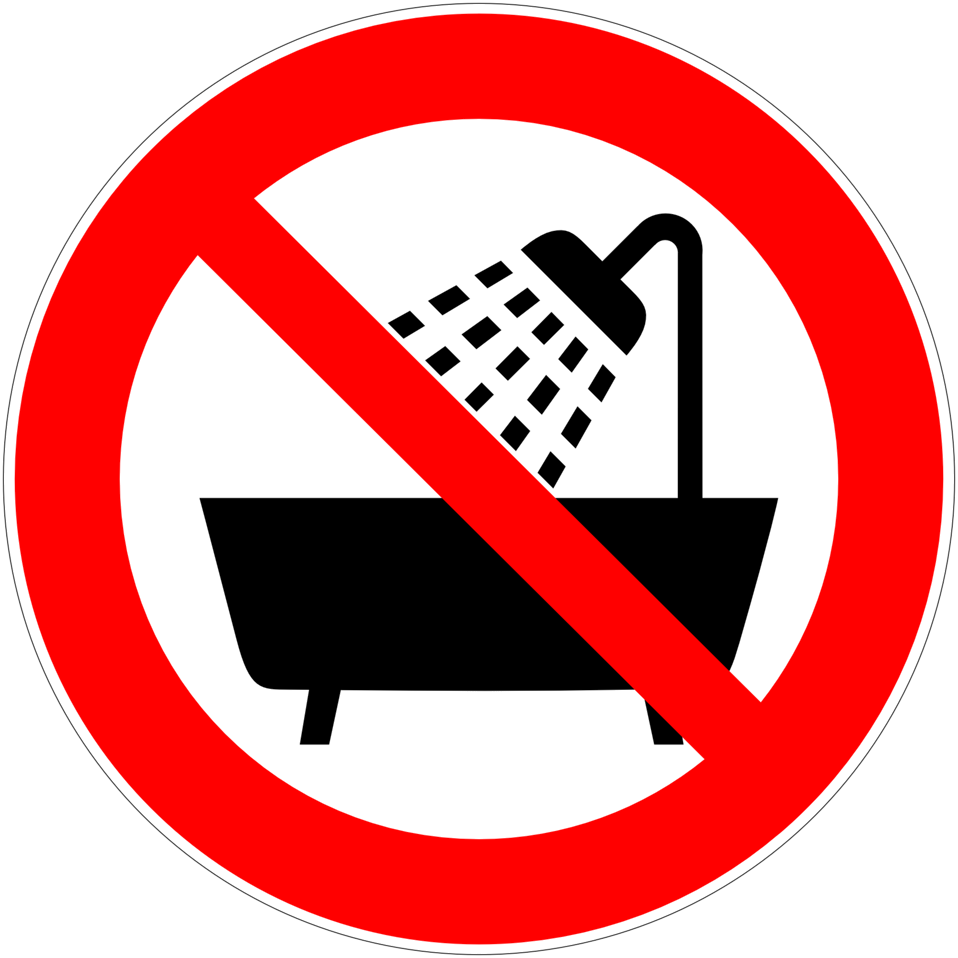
Deutsch: Verbot, dieses Gerät in der Badewanne, Dusche oder über mit Wasser gefülltem Waschbecken zu betreiben, Verbotszeichen D-P025 nach DIN 4844-2. Prohibition symbol: do not use the device in a bathtub or shower or over a sink filled with water. Prohibition sign D-P025 according to German standard DIN 4844-2.